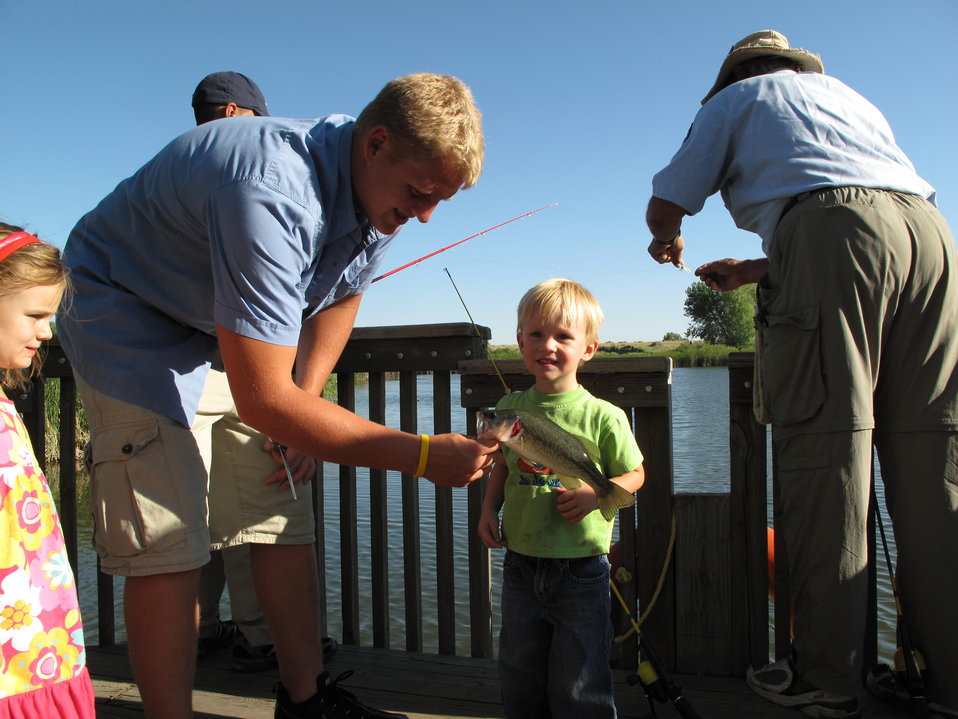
ELK fishing trip to RM Arsenal

His first fish!